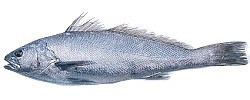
ombrina (Argyrosomus regius)